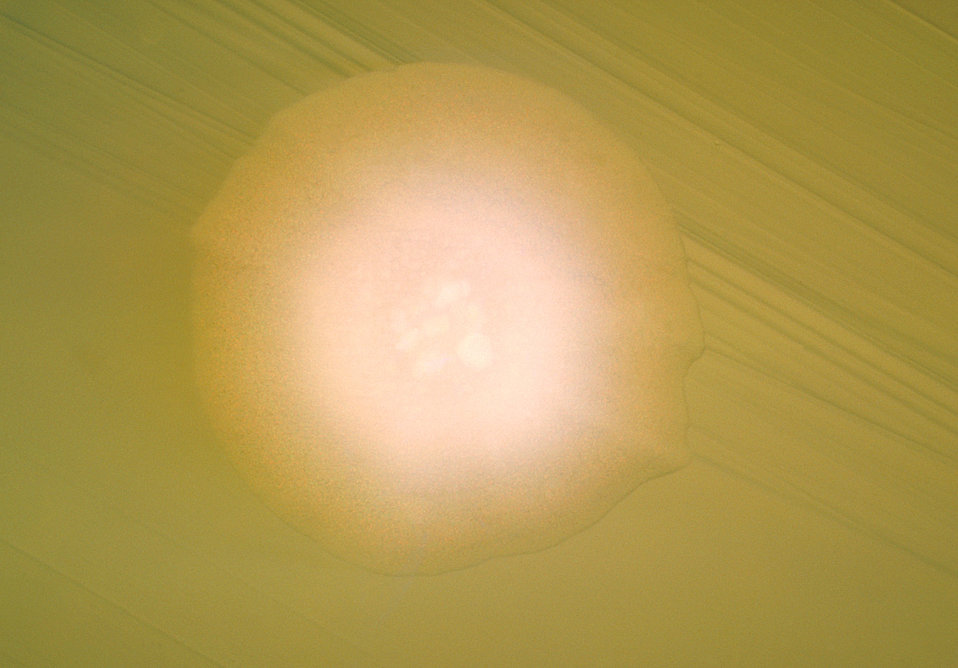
A BHI agar plate culture of Actinomyces sp., strain X-407, at 10 days.